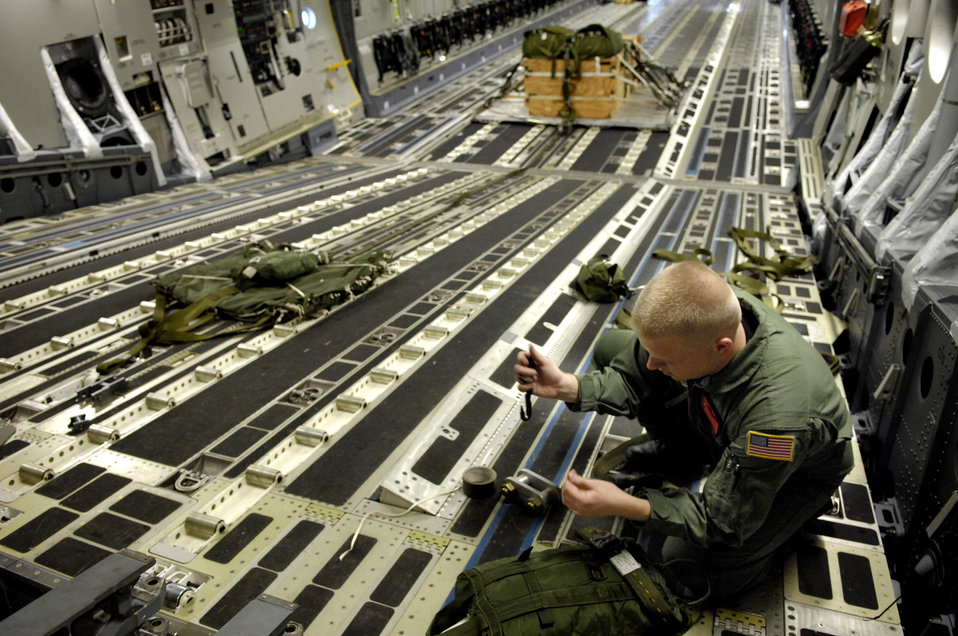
Hickam Airmen conduct 4-ship C-17 airdrop training

Senior Airman Todd Tichawa prepares the rigging for a parachute on his C-17 Globemaster III Aug. 13 at Hickam Air Force Base, Hawaii. Airman Tichawa, a loadmaster from the 535th Airlift Squadron, is taking part in a four-ship, multi-element airdrop training mission to maintain currency and proficiency.